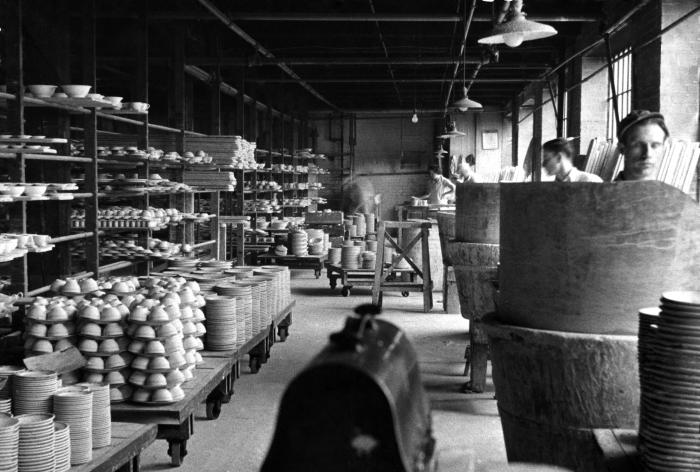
Provided by the Center for Disease Control's (CDC), National Institute for Occupational Safety and Health (NIOSH), this historic image depicted a number of male industrial workers inside a West Virginia ceramics factory, who were in the process of dipping newly fired bisque forms into glaze, which would then be refired, thereby, imparting a shiny surface to the forms. None of the men were wearing a filtered breathing mask inside this clay-processing environment. Workers should have taken precautions against the possibility of inhaling airborne particulates, which would lead to the chronic pulmonary disease known as pneumoconiosis, or silicosis, or more commonly known as 'grinders' disease', characterized by the formation of nodular fibrotic changes in the lungs. The image was published in the 'Public Health Bulletin', No. 244, 1939.